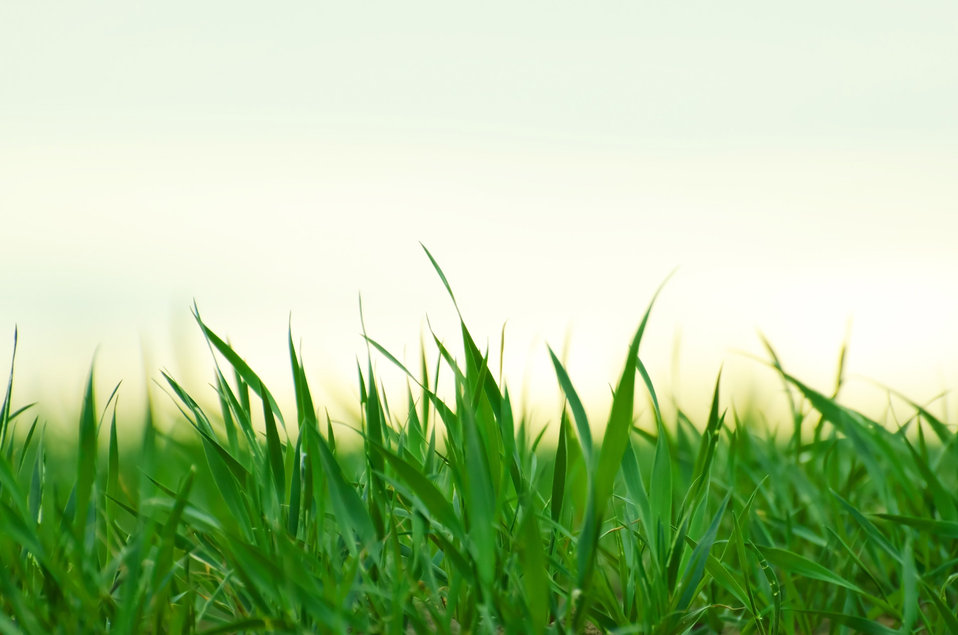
Grass - background.